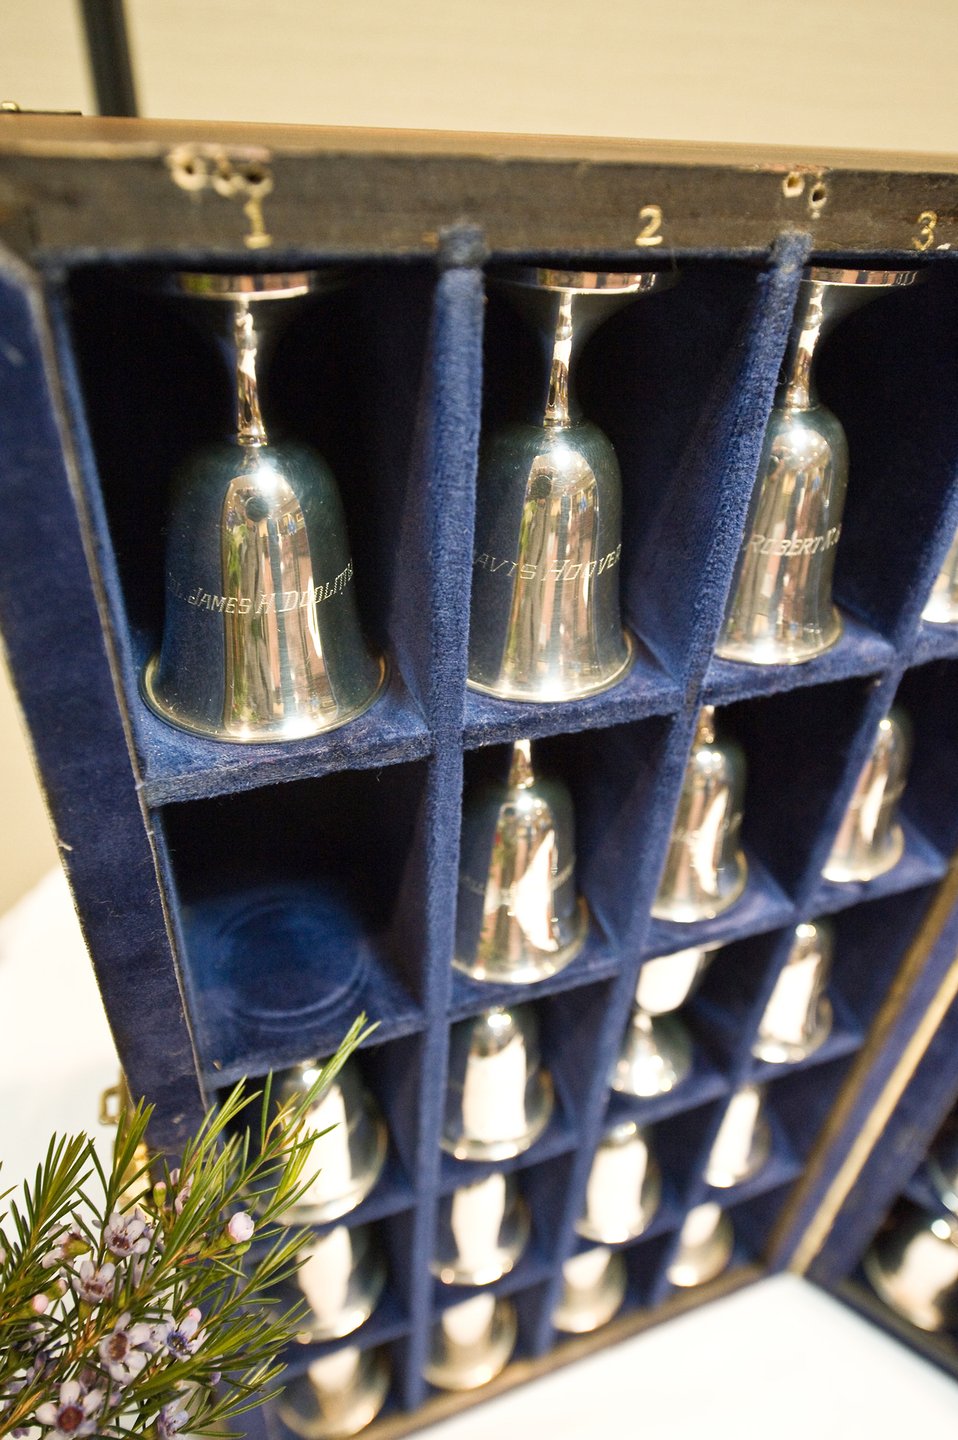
Doolittle Raiders 68th reunion

James Doolittle's goblet (upper left) and the goblets of other Doolittle Raiders who have passed are displayed at the Goblet Ceremony in Fairborn, Ohio, April 16, 2010. The ceremony honors all who participated in the Doolittle Raid on Tokyo during World War II. The downturned goblets represent aircrew members who have not survived. During the ceremony the name of every person is read and an attending Doolittle Raider responds to indicate the spirit of those who have passed are present. The set of goblets is now maintained by the National Museum of the U.S. Air Force at Wright-Patterson Air Force Base, Ohio.